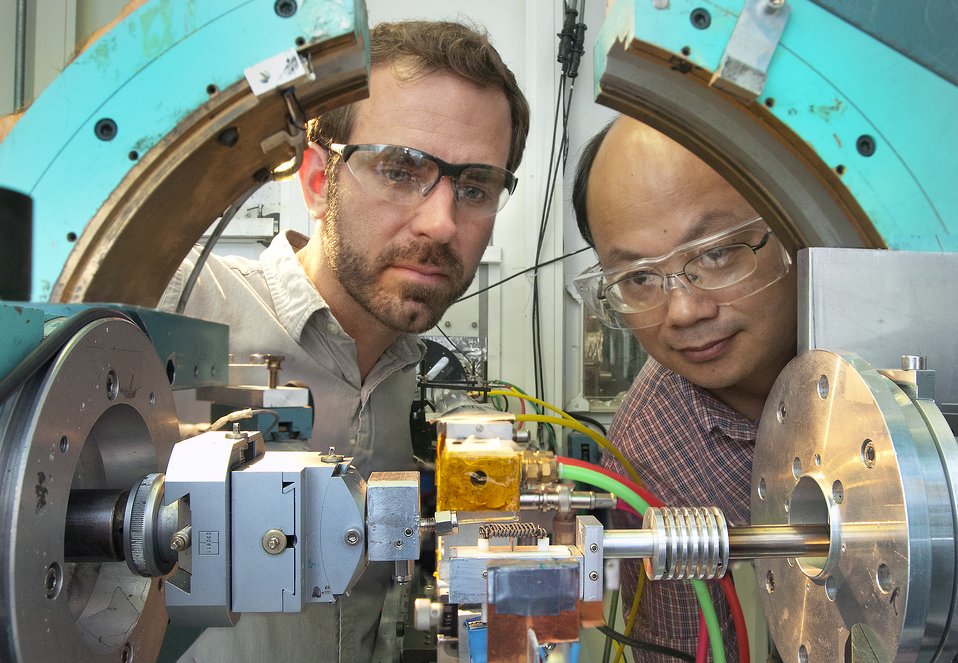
BNL working with collaborators at other institutions, are developing methods of examining lithium-ion reactions in real-time with nanoscale precision, offering unprecedented insights into these crucial materials.

The cherished portability of many popular electronics, from smart phones to laptops, mostly comes courtesy of lithium-ion batteries. Unfortunately, these dense and lightweight energy storage devices begin to degrade over time, losing total capacity even when sitting idle on the shelf. Scaling up this promising technology to better power electric vehicles or facilitate grid-scale storage demands battery lifetimes longer than a decade-and fundamental advances in lithium-ion engineering.